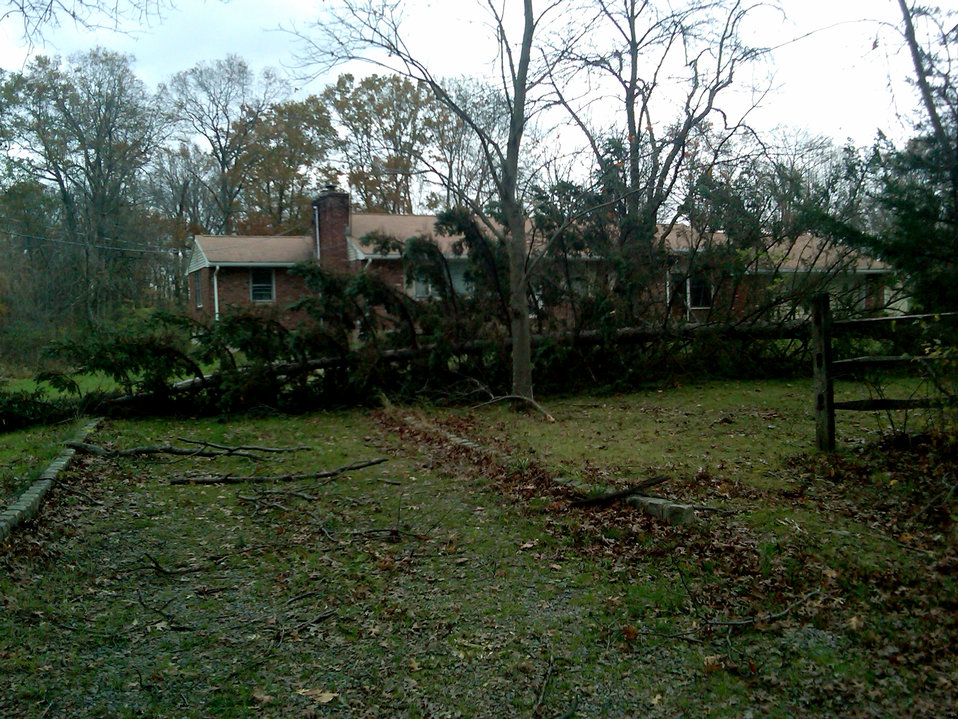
Hurricane Sandy caused damage to Great Swamp National Wildlife Refuge (NJ)

Fallen tree outside of an unoccupied residence on the refuge.